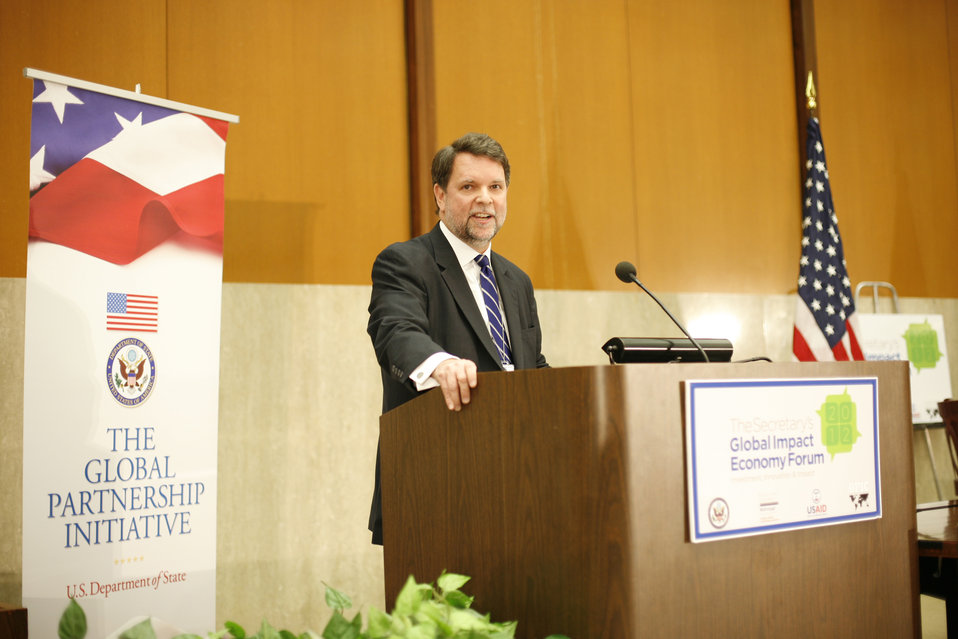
Special Representative Balderston Delivers Remarks

Special Representative for Global Partnerships Kris Balderston delivers remarks at the first-ever Global Impact Economy Forum at the U.S. Department of State in Washington, D.C., on April 26, 2012.